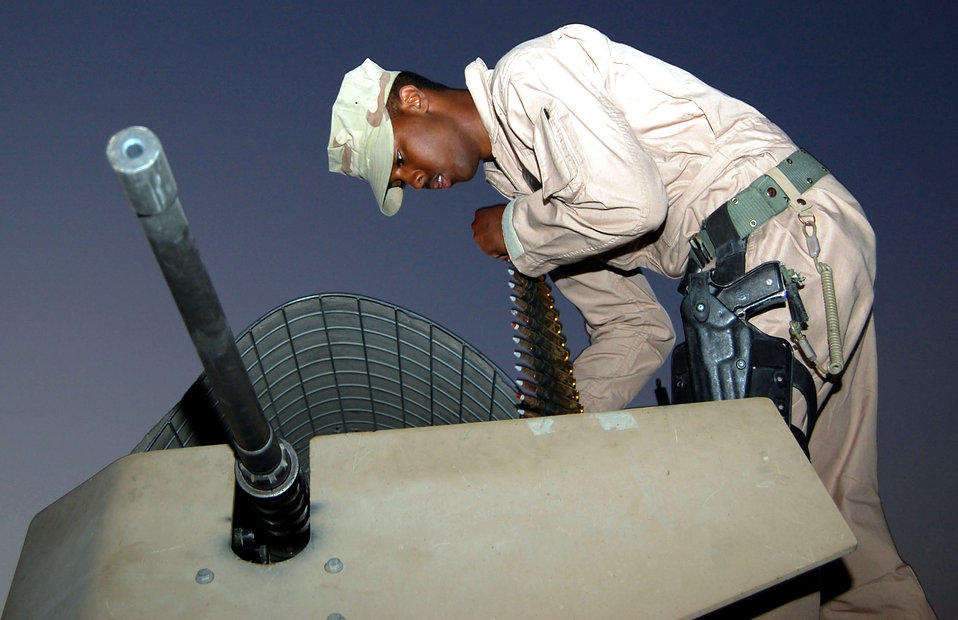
Convoy preparations

Airman 1st Class Bryson Cornelius feeds 50 caliber ammunition into a storage container Nov. 12 at Camp Bucca, Iraq. Airman Cornelious, an 887th Expeditionary Security Forces Punisher Squad gunner, is stationed at Lackland Air Force Base, Texas. He operates the M-2 heavy machine gun during convoy operations.